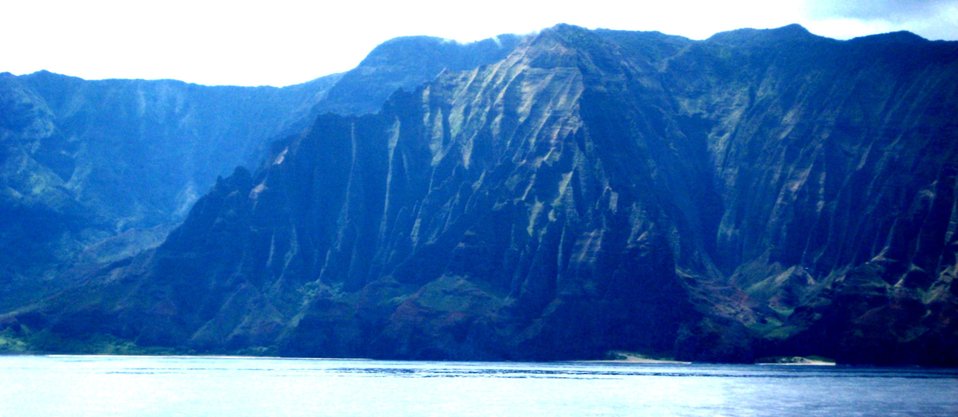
A view from offshore of the Na Pali coast, along the northwest shore of Kauai.